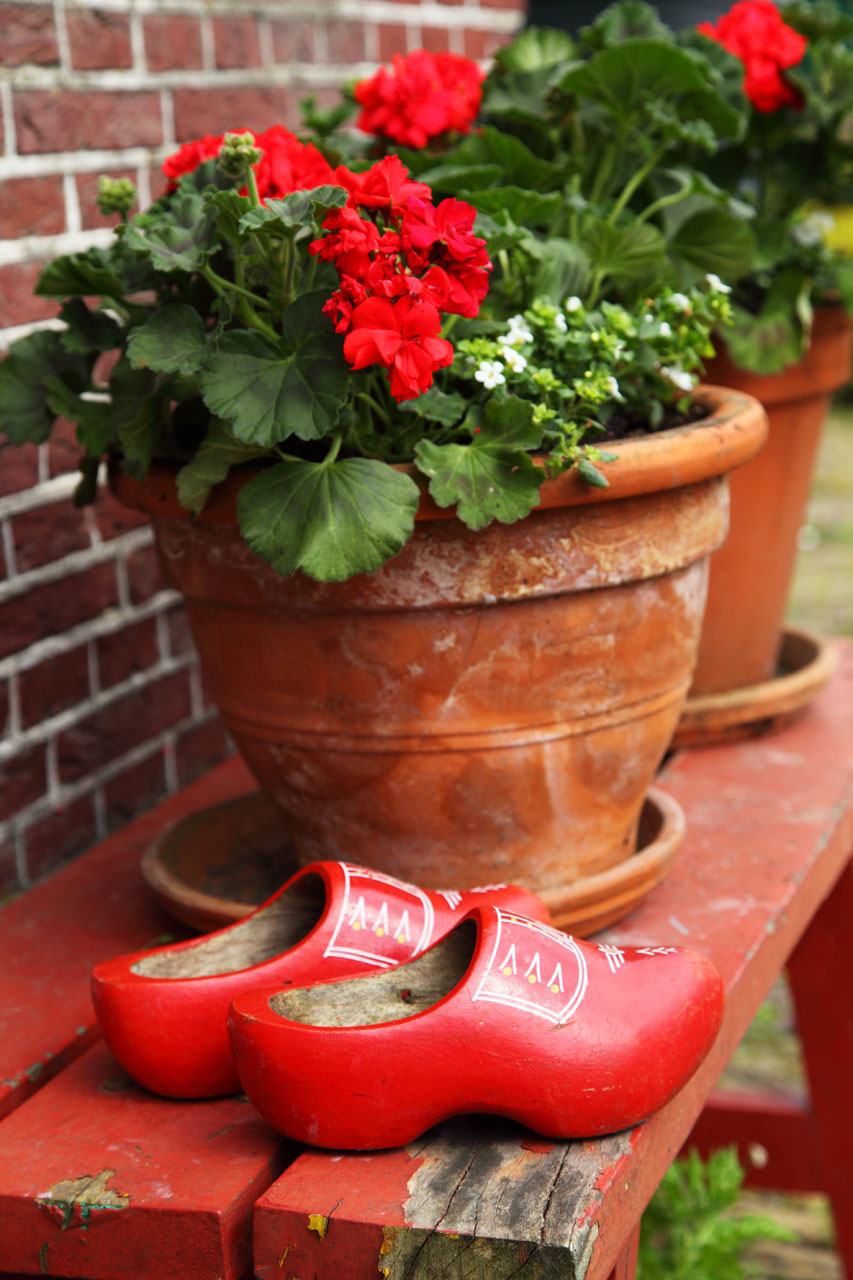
Dutch still life

Red clogs with flowers on bench.